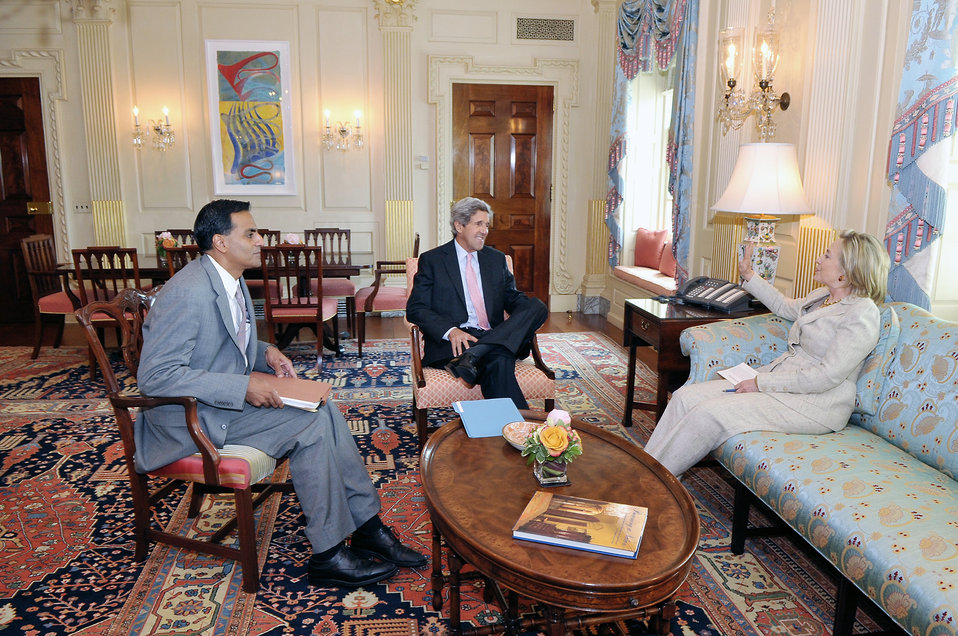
Secretary Clinton Meets With Senator Kerry and Assistant Secretary for Legislative Affairs Verma

U.S. Secretary of State Hillary Rodham Clinton meets with Senator John Kerry and Assistant Secretary for Legislative Affairs Richard Verma at the U.S. Department of State in Washington, D.C., on August 4, 2010.